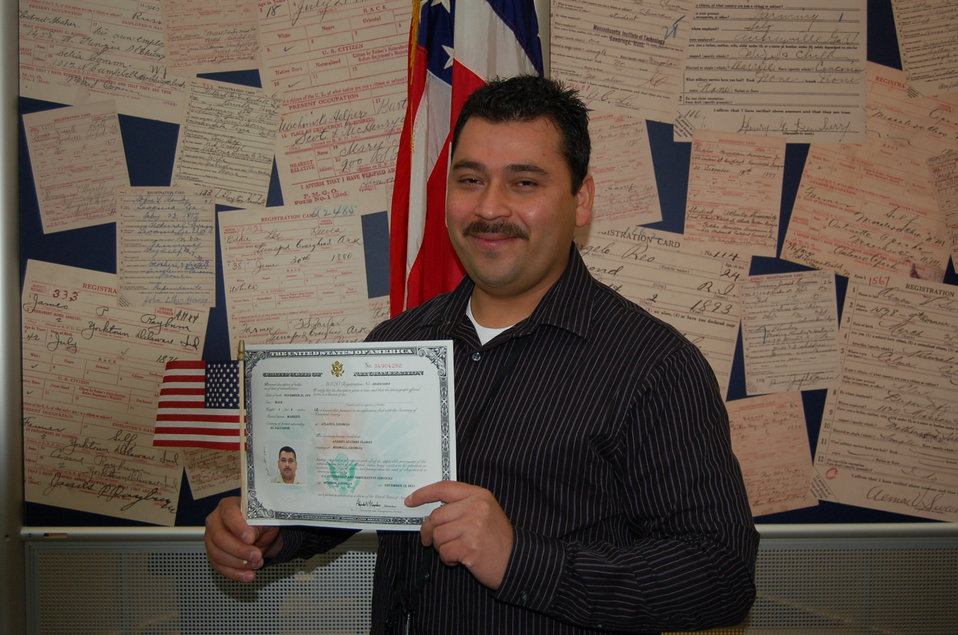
New Citizens